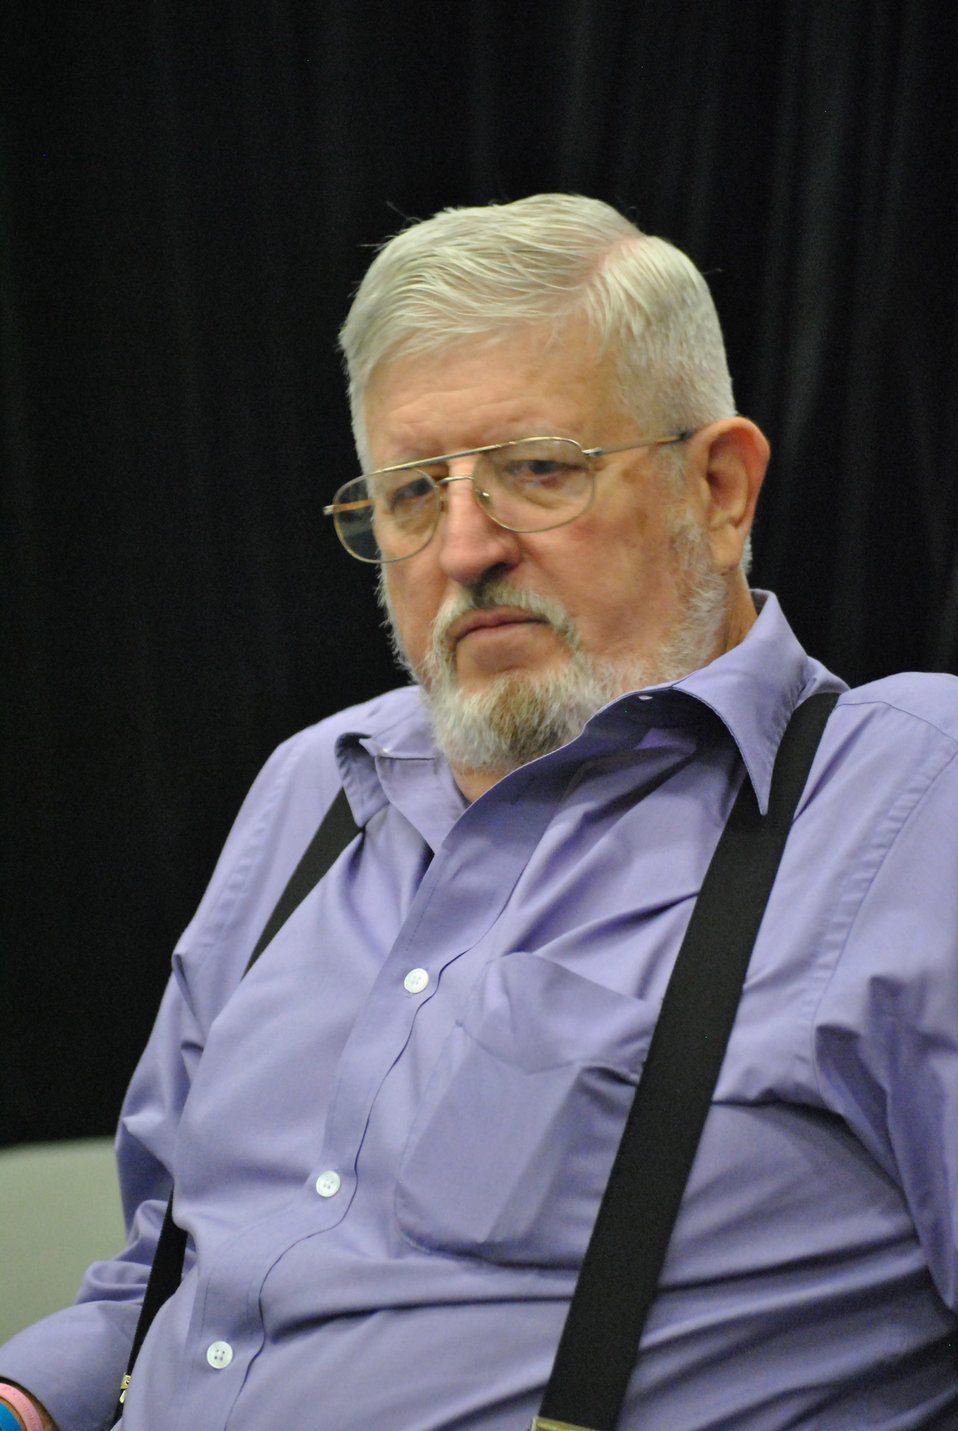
Chief Etchberger - Medal of Honor

Retired Tech. Sgt. John Daniel reflects on the 1968 battle at Lima Site 85 in Laos that resulted in the posthumous award of the Medal of Honor for Chief Master Sgt. Richard Etchberger. Sergeant Daniel was one of the Airmen saved by Chief Etchberger during the battle at the radar site,